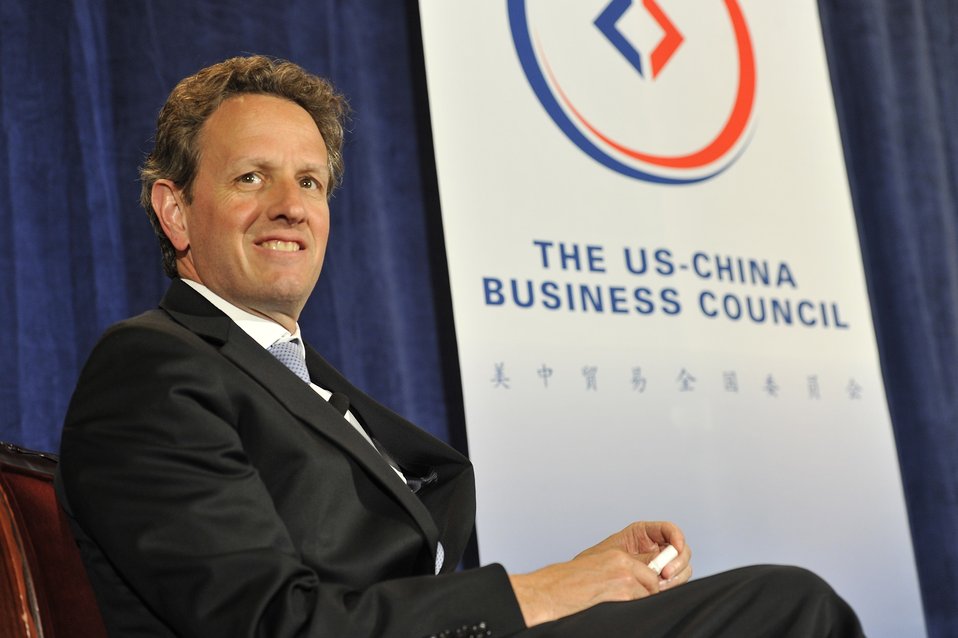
U.S.-China Business Council

At the U.S.-China Business Council, Secretary Geithner discussed the need to build on that progress with continued reform of the exchange rate regime, concrete progress in leveling the playing field for American businesses, and steps to broaden and deepen financial sector development.